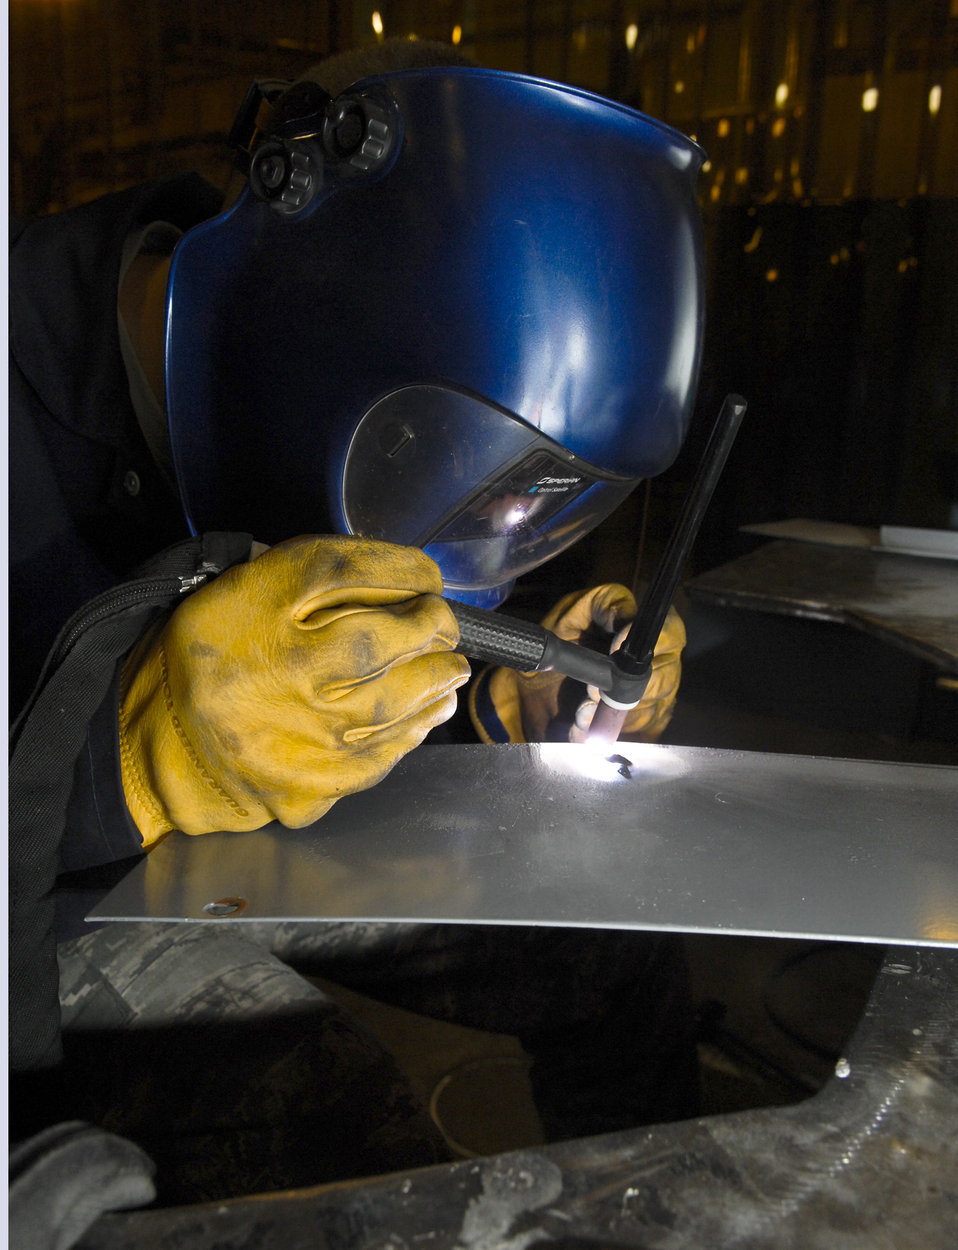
Precise repair

Airman 1st Class Derek Johnson welds a piece of air ground equipment, June 22, 2010, at Joint Base Elmendorf-Richardson, Alaska. The metals technologies shop is responsible for many repair and maintenance jobs on the base. Airman Johnson is assigned to the 3rd Equipment Maintenance Squadron.